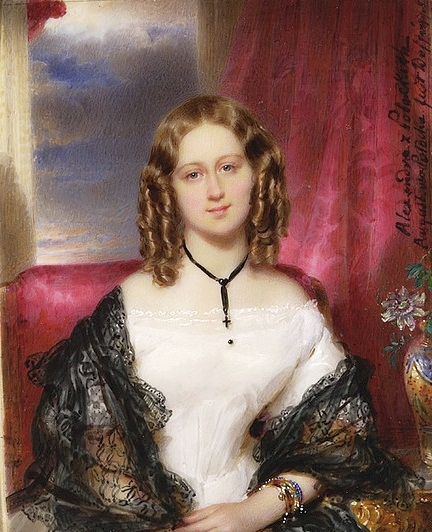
Daffinger Aleksandra Potocka